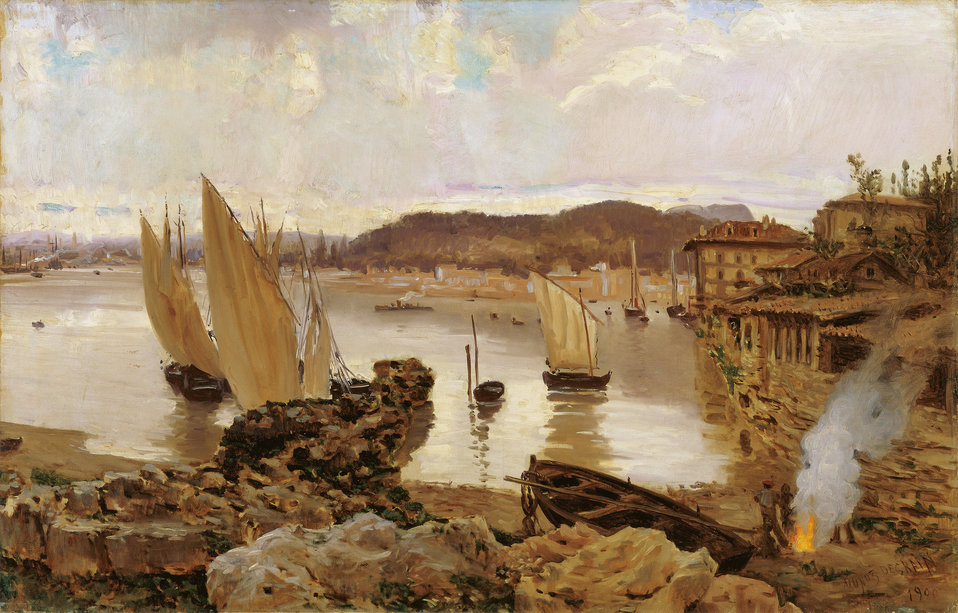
Port of Bilbao Oil on canvas, 83 x 129.5 cm, Inv. CTB.1995.45 Museo Carmen Thyssen Native name Museo Carmen Thyssen Location Málaga, Spain Coordinates 36° 43′ 17″ N, 4° 25′ 22″ W Established 2011 Website www.carmenthyssenmalaga.org